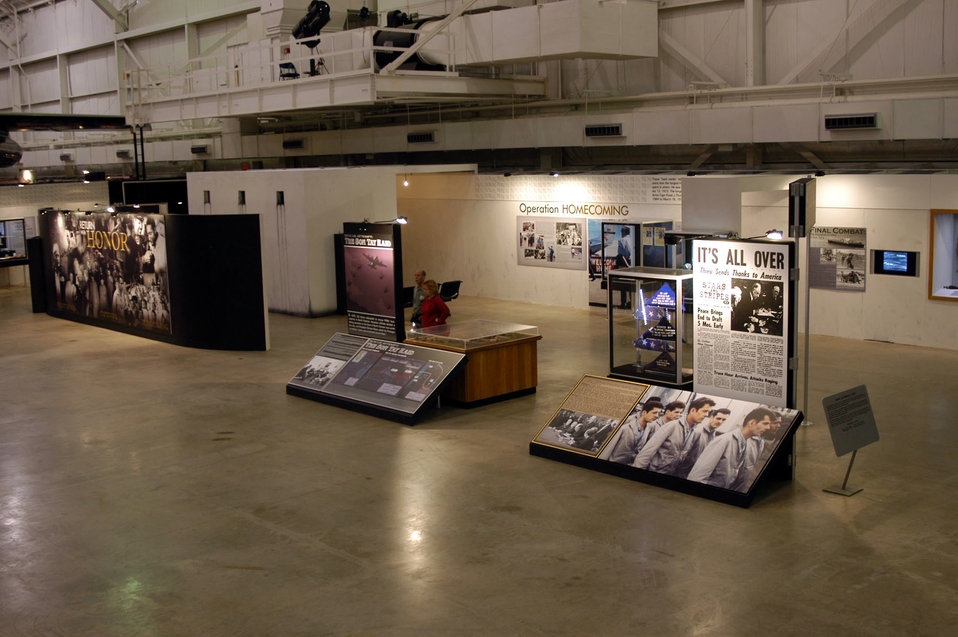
POW Exhibit

The National Museum of the U.S. Air Force recently was recognized for it's exhibit